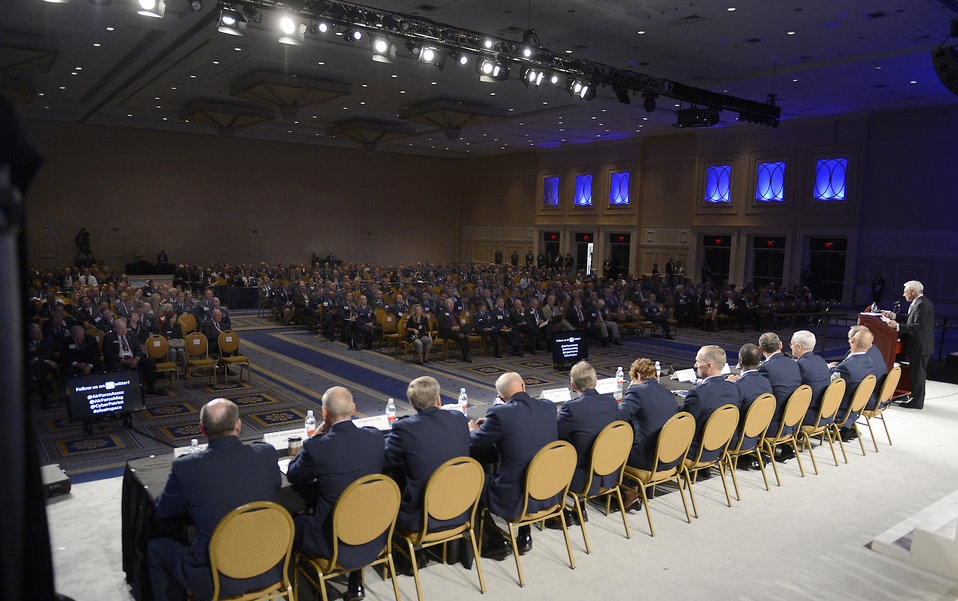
Air Force leaders offer perspectives at four-star forum

Air Force senior leaders discuss issues affecting the service during a 12-member panel at the Air Force Association's Air and Space Conference and Technology Exposition in Washington, D.C., Sept. 19, 2012.